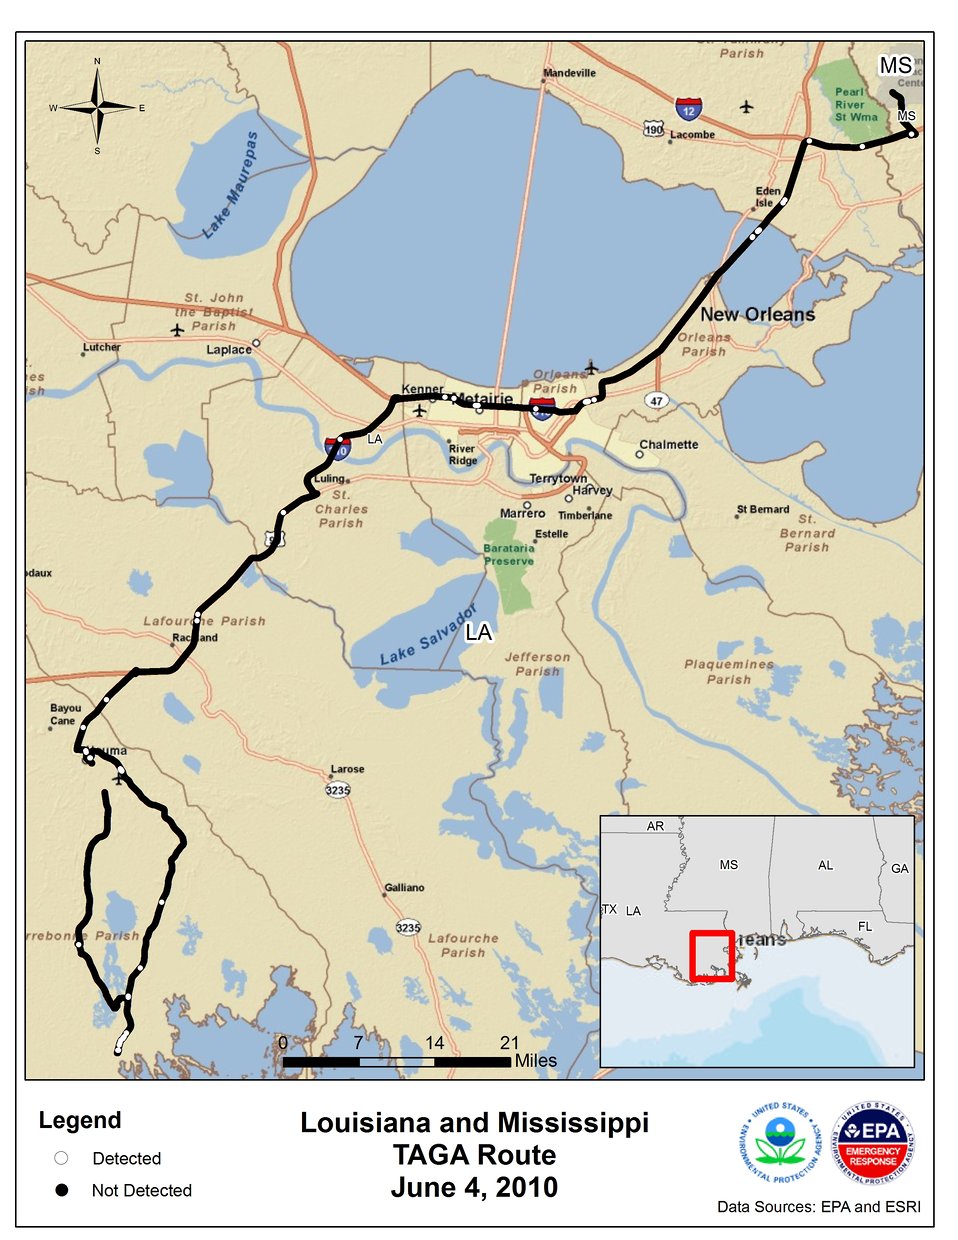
EPA TAGA Air Monitoring Locations June 4, 2010